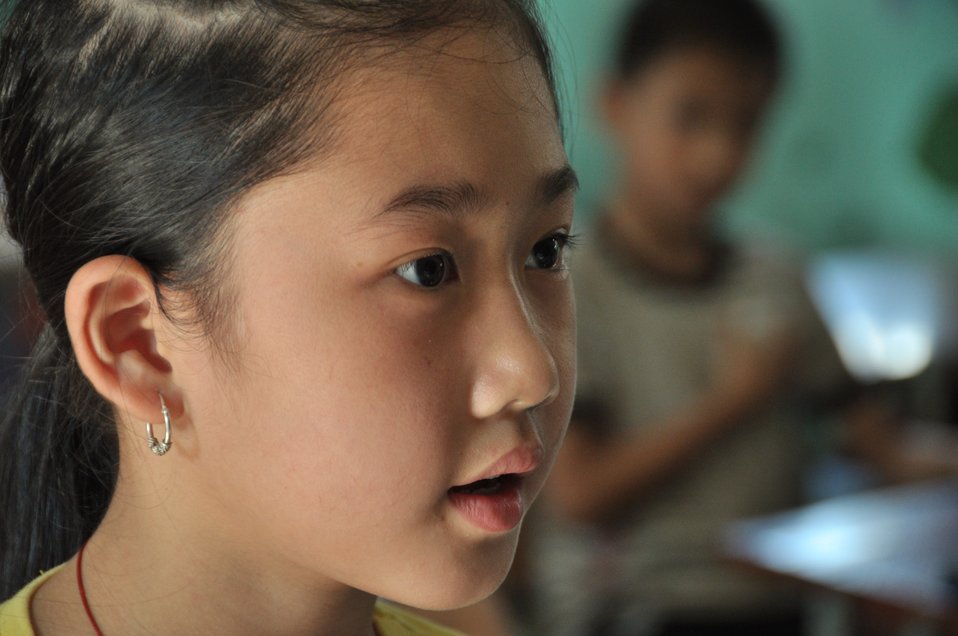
USAID supports deworming education and medication distribution in Bac Giang Province

May 20, 2013